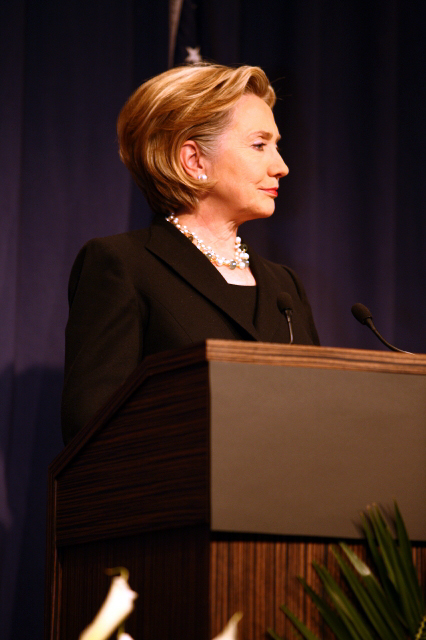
Press Conference With Russian Foreign Minister

Press conference after dinner meeting between U.S. Secretary of State Hillary Rodham Clinton and Russian Foreign Minister Sergey Lavrov in Geneva, Switzerland March 6, 2009.